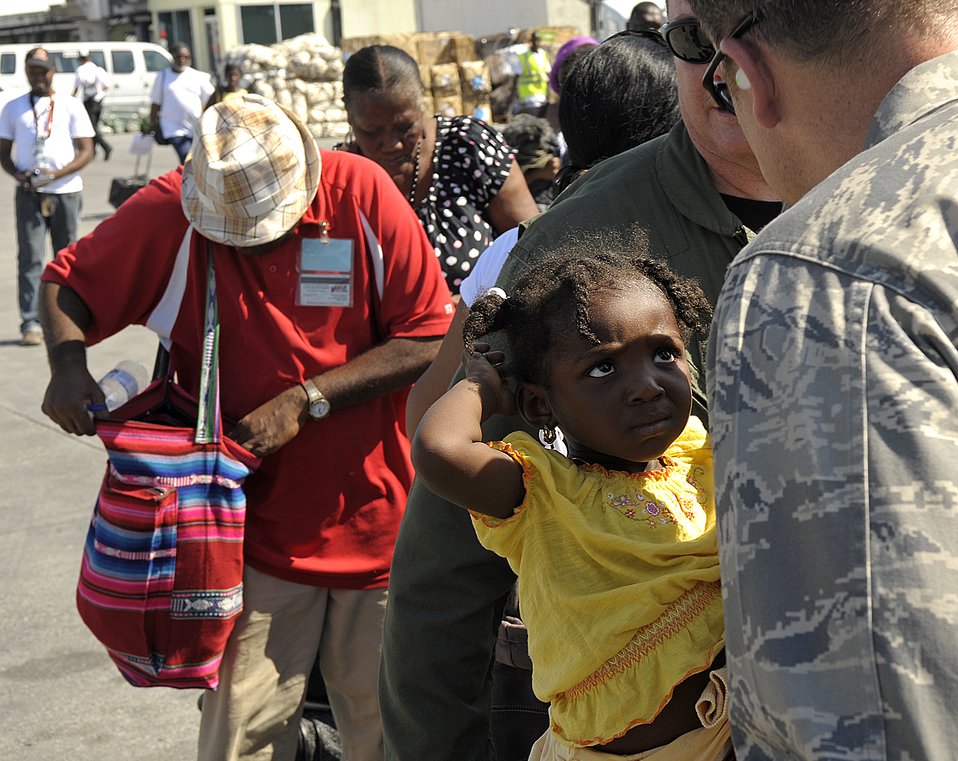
Hurlburt Airmen bring humanitarian aid to quake-stricken Haiti

Lt. Col. Joseph Pocreva, 1st Special Operations Wing, Air Force Special Operations Command, speaks with a young Haitian girl at the Troussaint Louverture International Airport in Port-au-Prince, Haiti, Jan. 15. before she is evacuated to the United States. Port-au-Prince was devastated by an earthquake Jan. 12.